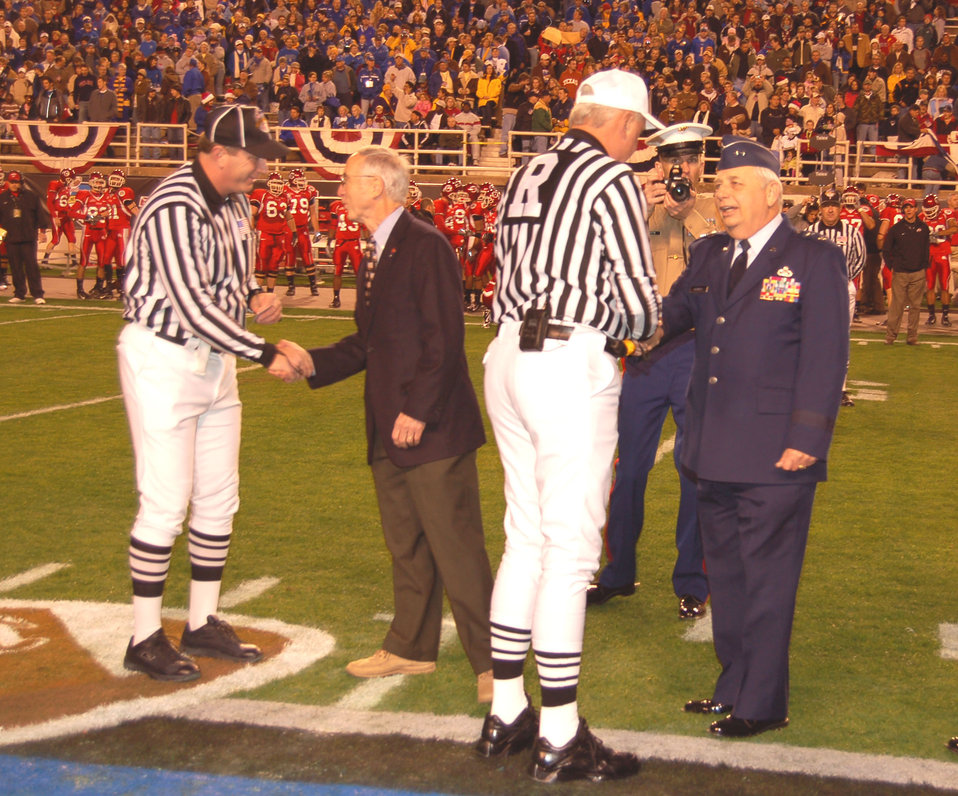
Bell Helicopter Armed Forces Bowl pays tribute to servicemembers

Referees shake hands with Deputy Secretary of Defense Gordon England and Maj. Gen. Allen R. Dehnert, assistant adjutant general and commander, Texas Air National Guard, before the coin toss at the Bell Helicopter Armed Forces Bowl in Fort Worth, Texas, Dec. 23. The University of Utah Utes defeated the Golden Hurricanes of the University of Tulsa, 25-13.